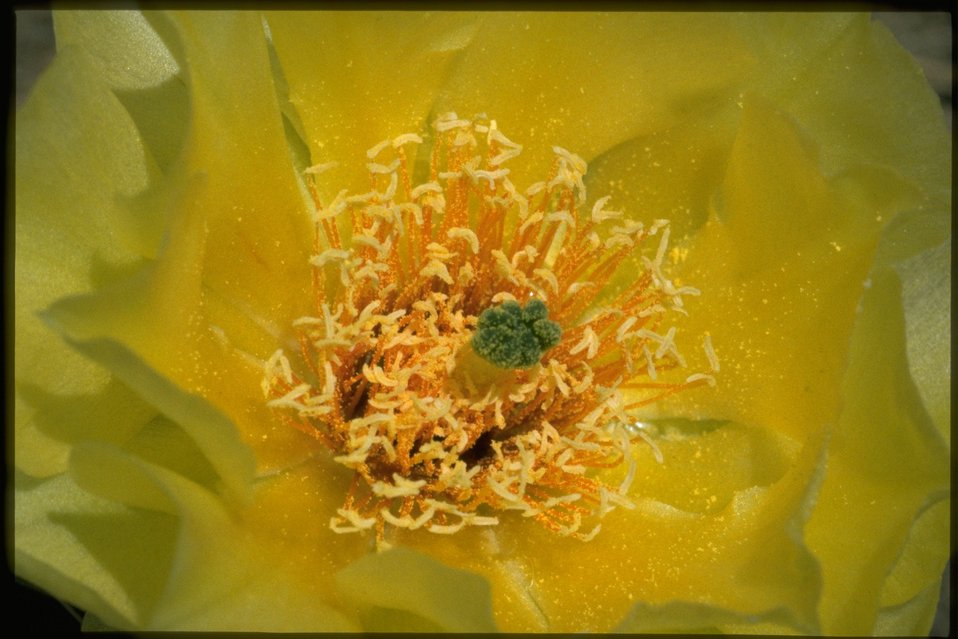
Closeup shot of Opuntia.